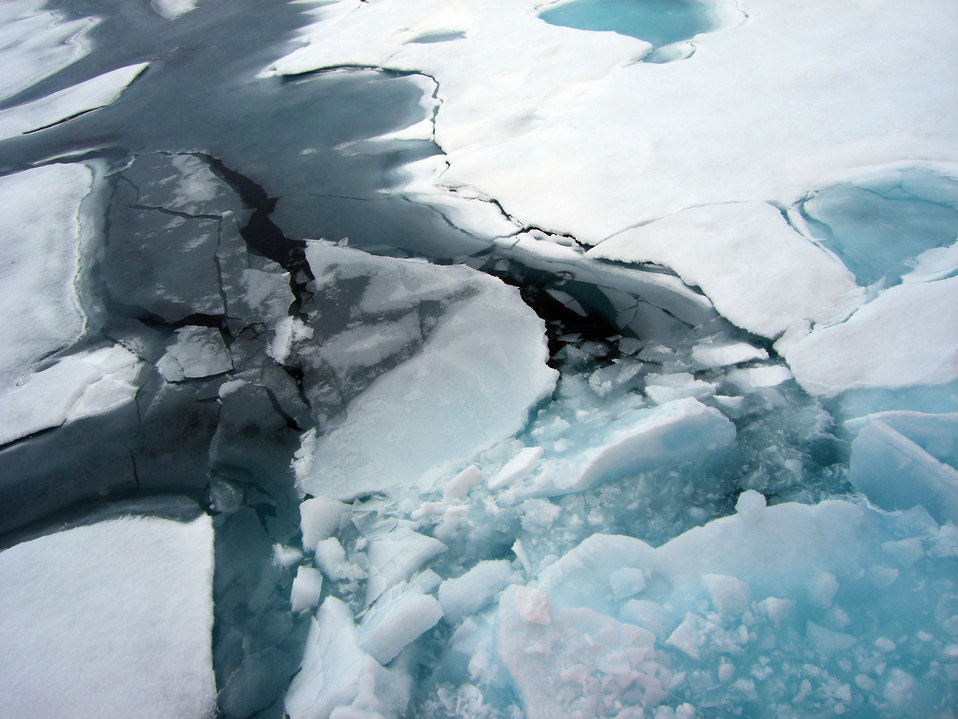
U.S.-Canada Fourth Joint Mission To Map the Continental Shelf in the Arctic Ocean

Views of the U.S.-Canada fourth joint mission to map the continental shelf in the Arctic Ocean in August and September 2011. The 2011 joint mission employed the flagship icebreaker from each country, the U.S. Coast Guard Cutter Healy and the Canadian Coast Guard Ship Louis S. St-Laurent (LSSL), with each ship performing different functions and one ship breaking ice for the other.